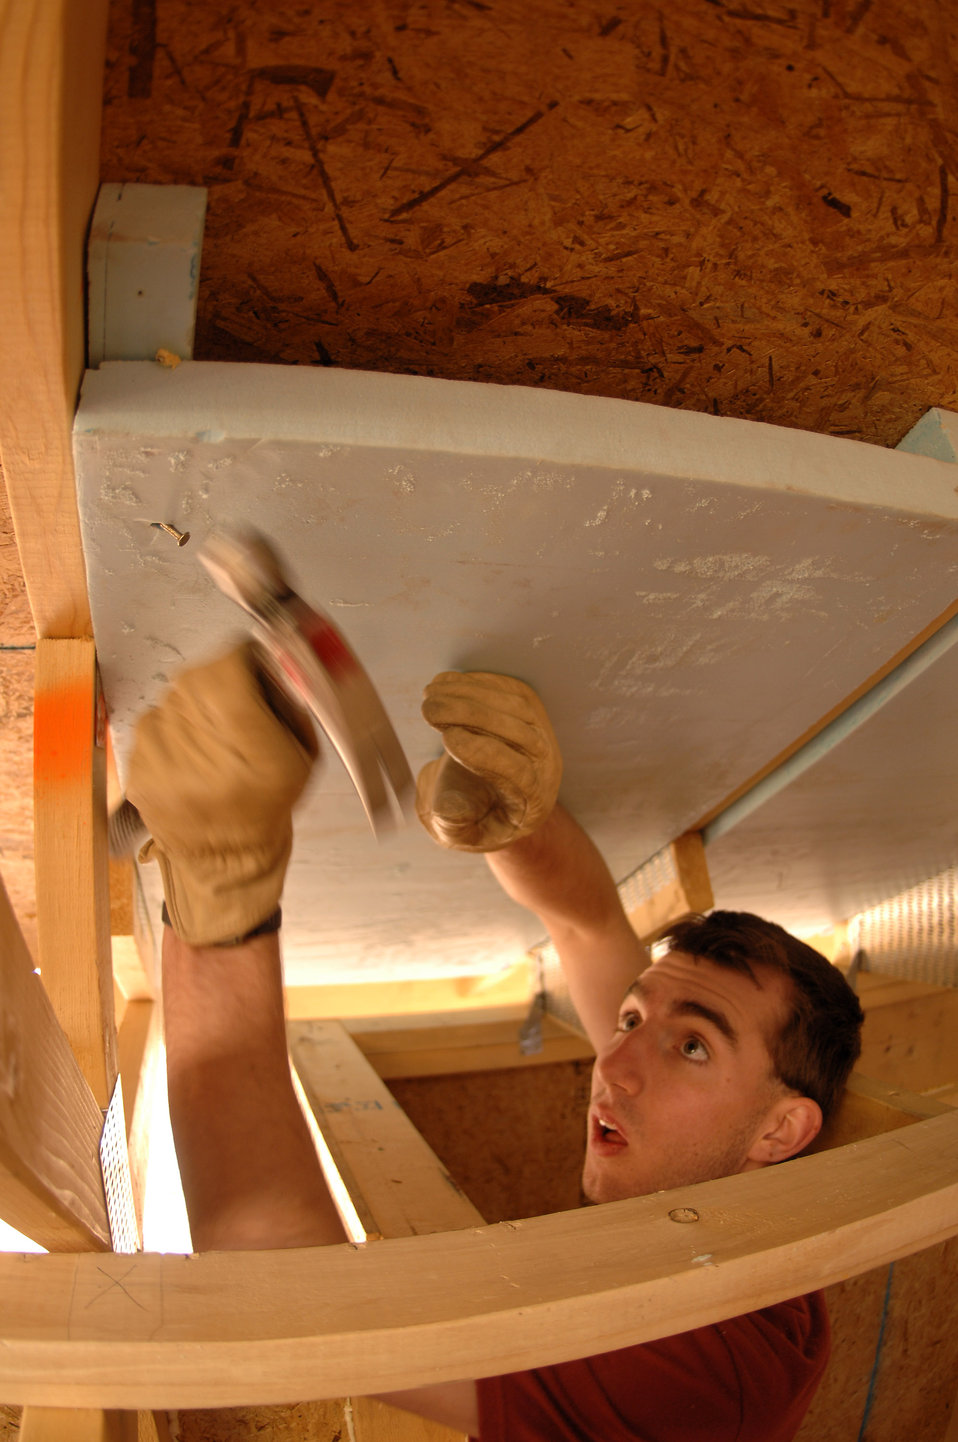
Cadets give up spring break to build homes

Cadet 3rd Class John Ball maneuvers in a tight spot to secure a piece of insulation in place. Cadet Ball is one of 65 Air Force Academy cadets giving up their spring break this week, to build homes for the needy in Santa Fe, N.M.; Cody, Wyoming; El Paso, Texas; and Beaumont, Texas.